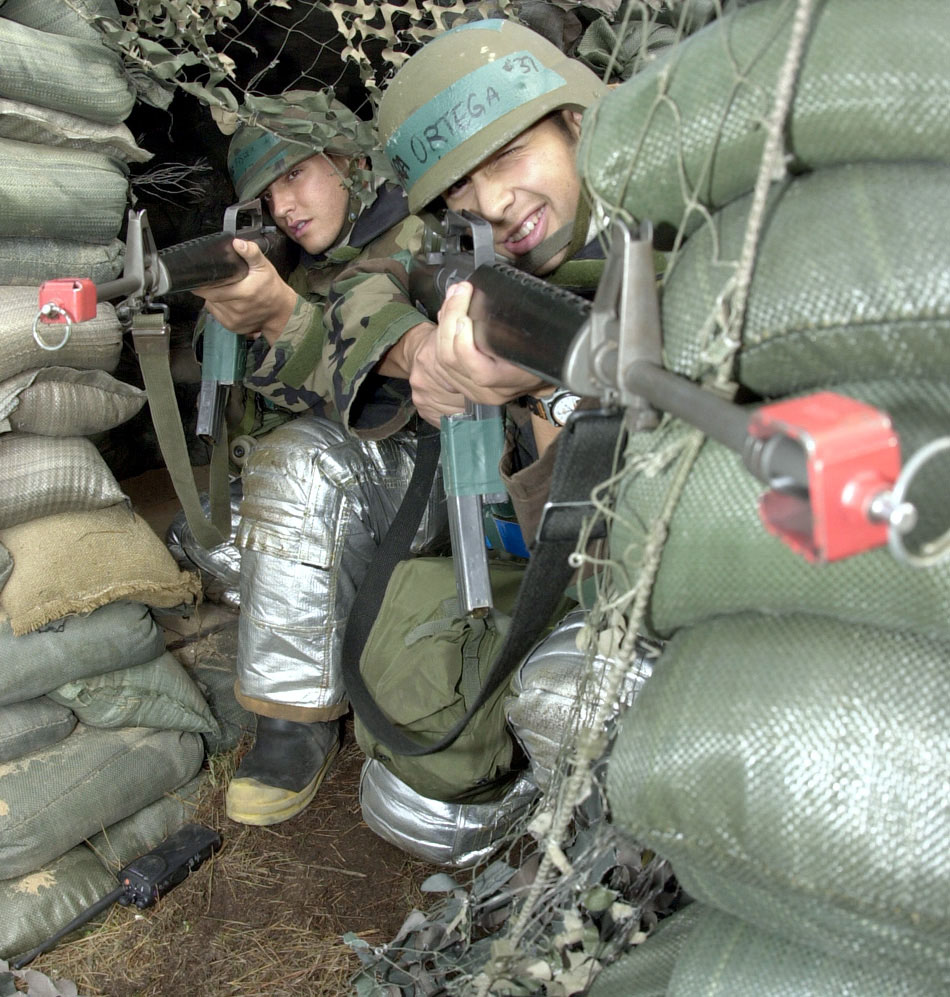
Defenders

KUNSAN AIR BASE, South Korea -- Senior Airman Jesus Ortega and Airman 1st Class Jonathan Fisher, 8th Civil Engineer Squadron firefighters defend against opposing forces at their defensive fighting positions during Foal Eagle 2000. Foal Eagle 2000 is a combined Republic of Korea/U.S. Forces Korea joint field training exercise that occurred peninsula-wide from Oct. 25 to Nov. 3.